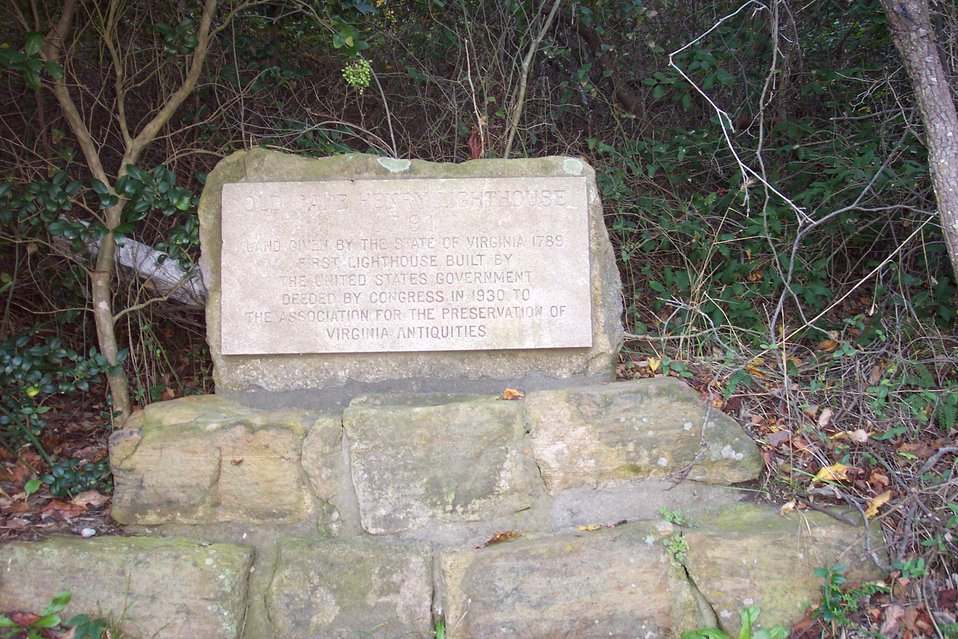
Plaque commemorating the Old Cape Henry Lighthouse and noting that it was deeded to the Virginia Association for the Preservation of Antiquities in 1930.